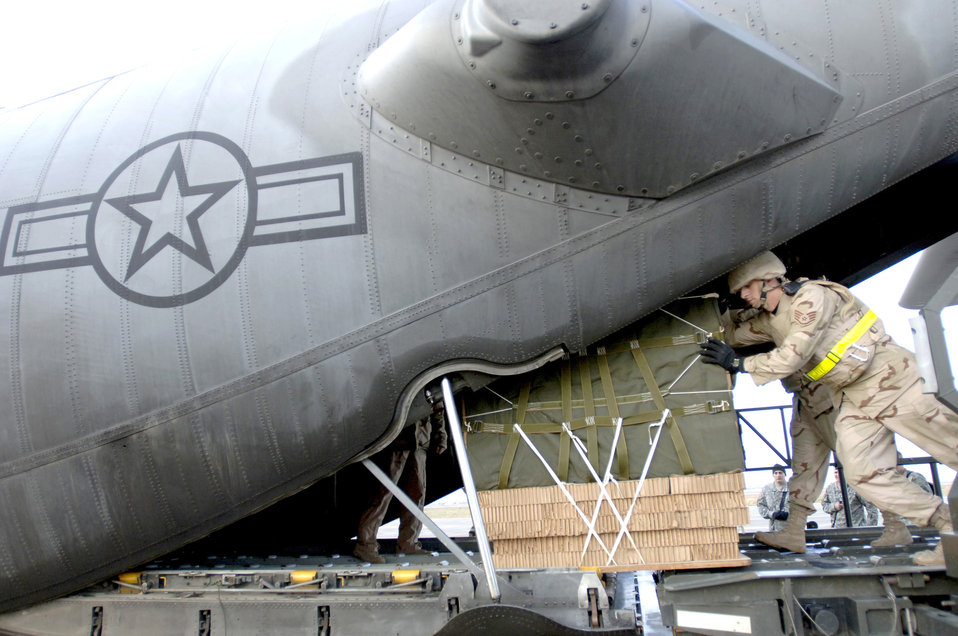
First JPADS airdrop over Iraq a success

Staff Sgt. Morgan Abner loads six 1,200-pound bundles of water and Meals, Ready to Eat onto a C-130 Hercules Feb. 16 at Balad Air Base, Iraq, in preparation for the first Improved Container Delivery System airdrop mission in support of Operation Iraqi Freedom. Sergeant Abner is an aerial port member assigned to the 332nd Expeditionary Logistics Readiness Squadron.